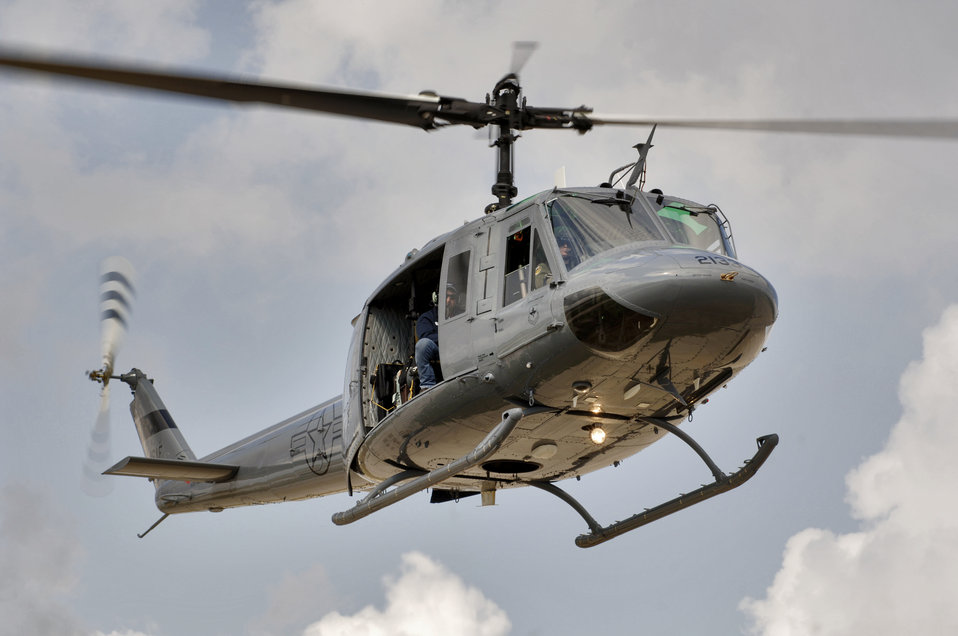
New Huey

RANDOLPH AIR FORCE BASE, Texas -- Capt. John Beurer (right seat) pilots the TH-1H trainer helicopter with Jeff Cutrell, instructor pilot. This is the first of 24 TH-1H's that will be modified to train Air Force helicopter student pilots. TH-1H Huey II is the newest aircraft to join the Air Force inventory.